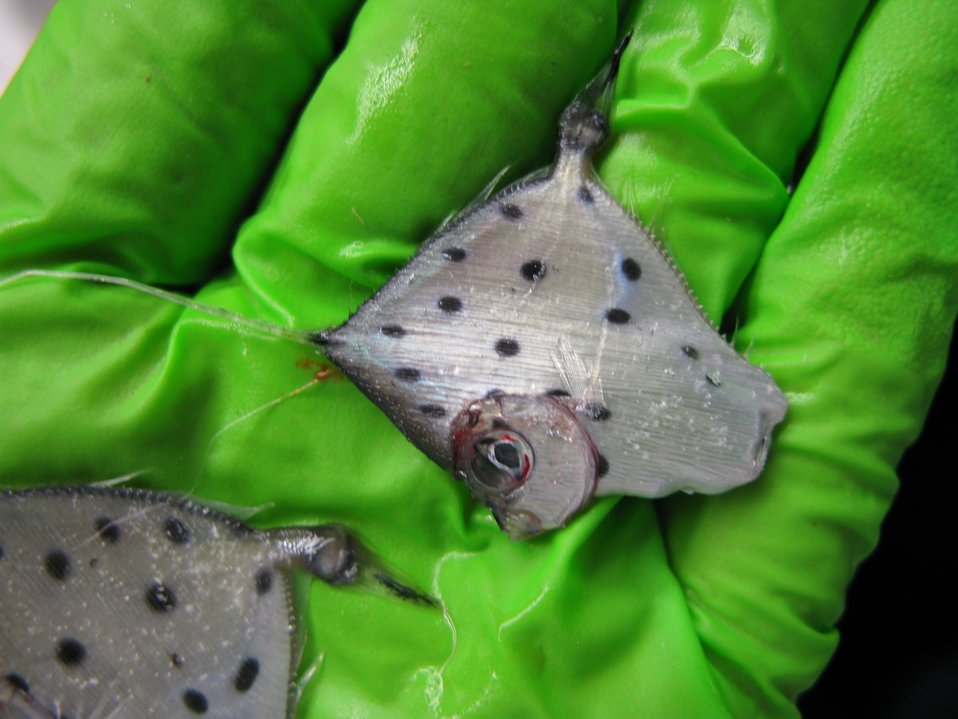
Spotted tinselfish (Xenolepidichthys dalgleishi)